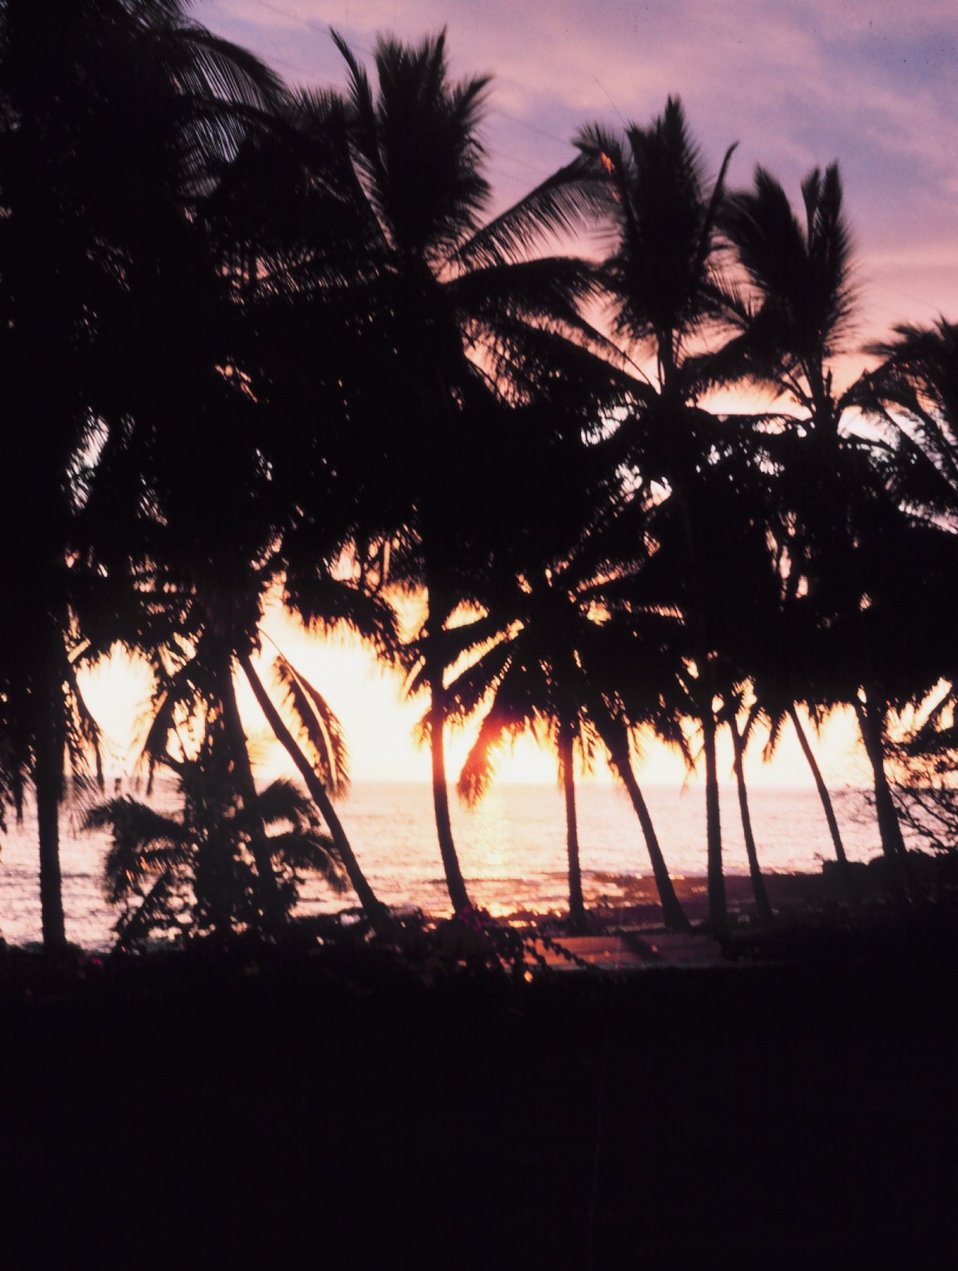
Kona White Sands